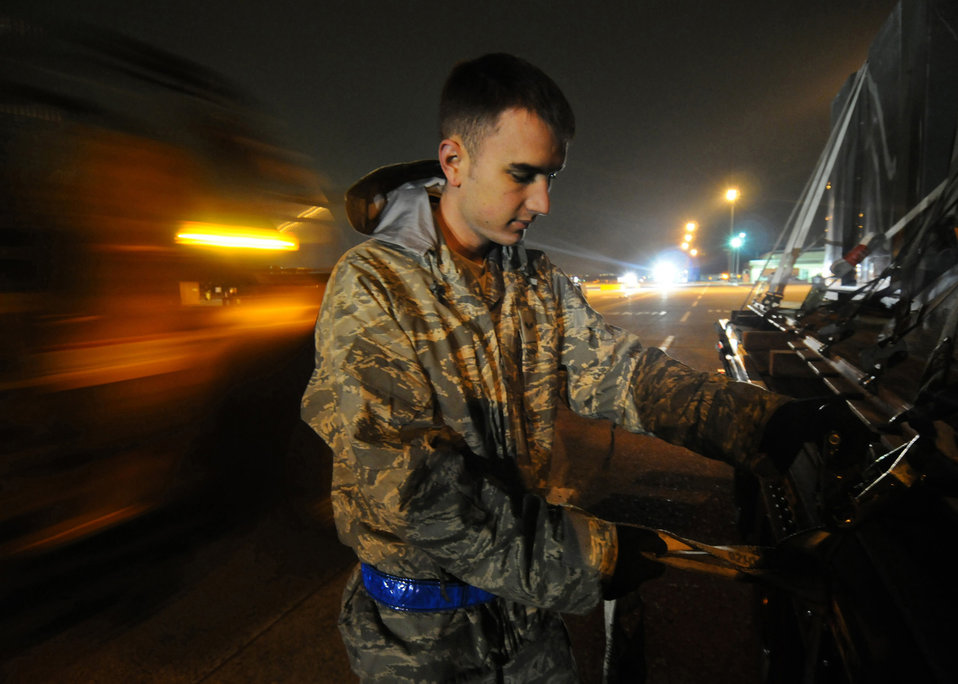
Bringing in the load

Senior Airman Steven Tawney secures a load of liquid nitrogen on a flat-bed trailer during Phase I of Exercise Beverly Morning 09-03 March 31 at Yokota Air Base, Japan. Base personnel will be conducting the exercise March 30 through April 3 to maintain operational readiness. Airman Tawney is assigned to the 374th Logistics Readiness Squadron.